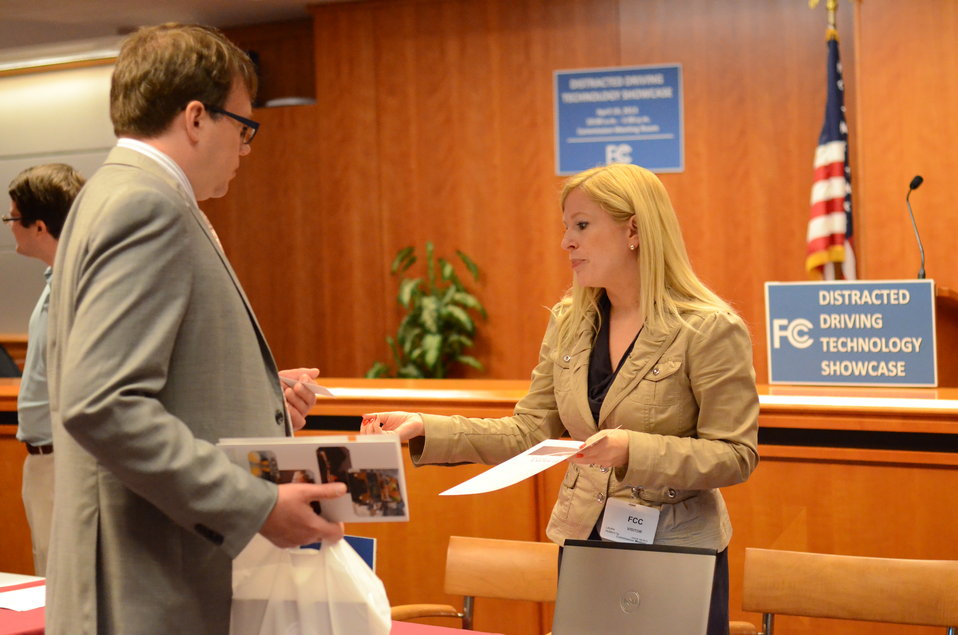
Distracted Driving Technology Showcase April 19, 2013